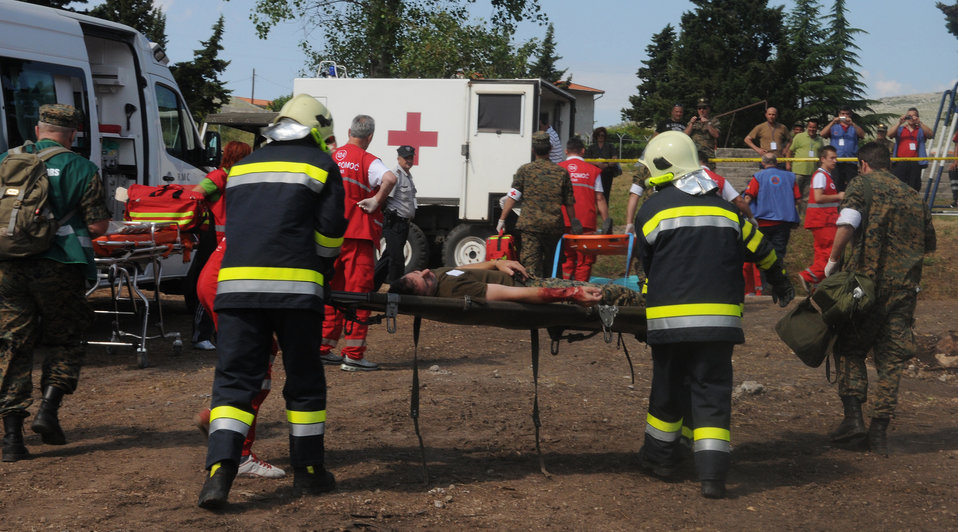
SR12

Participants of Shared Resilience 2012 carry a victim to safety during a collapsed building scenario at Capljina, Bosnia-Herzegovina, June 4, 2012. The exercise, in the spirit of partnership for peace, directly supports U.S. European Command's theater cooperation efforts and strategy for active security with European countries.